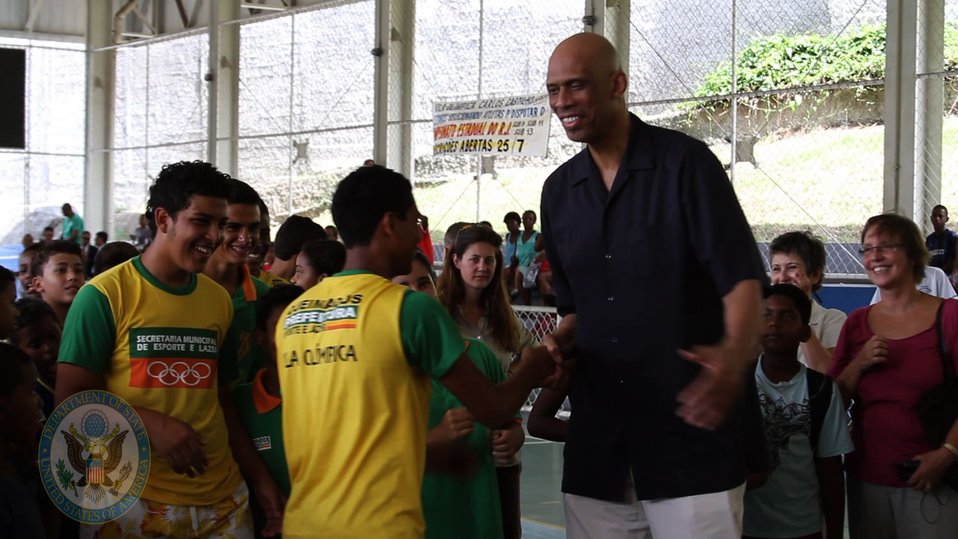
Global Cultural Ambassador Kareem Abdul-Jabbar Engages Youth

Hall-of-Famer and Global Cultural Ambassador for the U.S. Department of State Kareem Abdul-Jabbar discusses the importance of education, social and racial tolerance, cultural understanding, and using sports as a means of empowerment with youth in Rio de Janeiro, Brazil, on January 26, 2012.